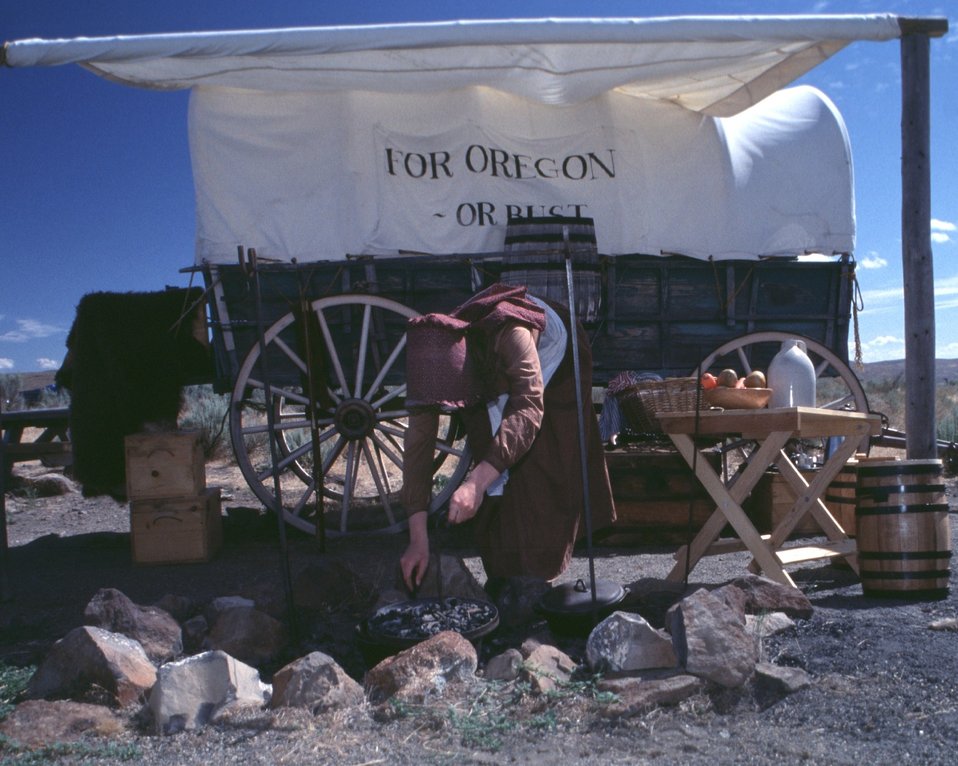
Rebecca Crow portrays a pioneer woman cooking on the Oregon Trail.